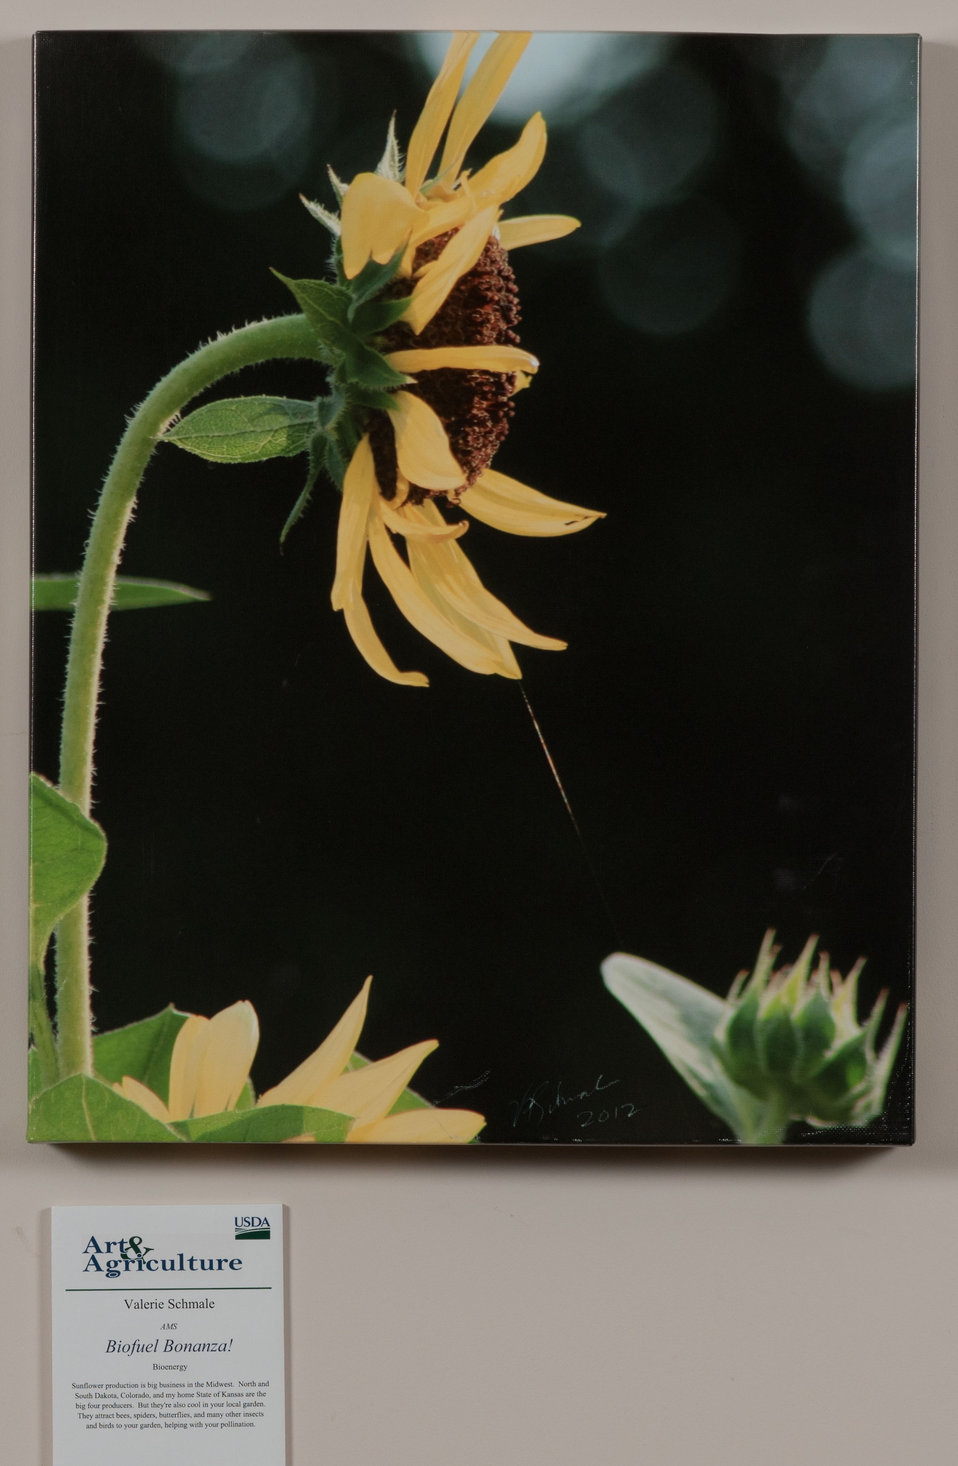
Online Viewer's Choice entries of the 2013 Art & Agriculture, Tuesday, July 9, 2013, in the South Building, Washington, D.C. Themes were expressed by employees from across the department and the contest was open to full-time and part-time USDA employees. Winning artwork will be displayed till the end of the year. U.S. Artistic expression is a creative outlet that is vital for an individual to grow and develop.